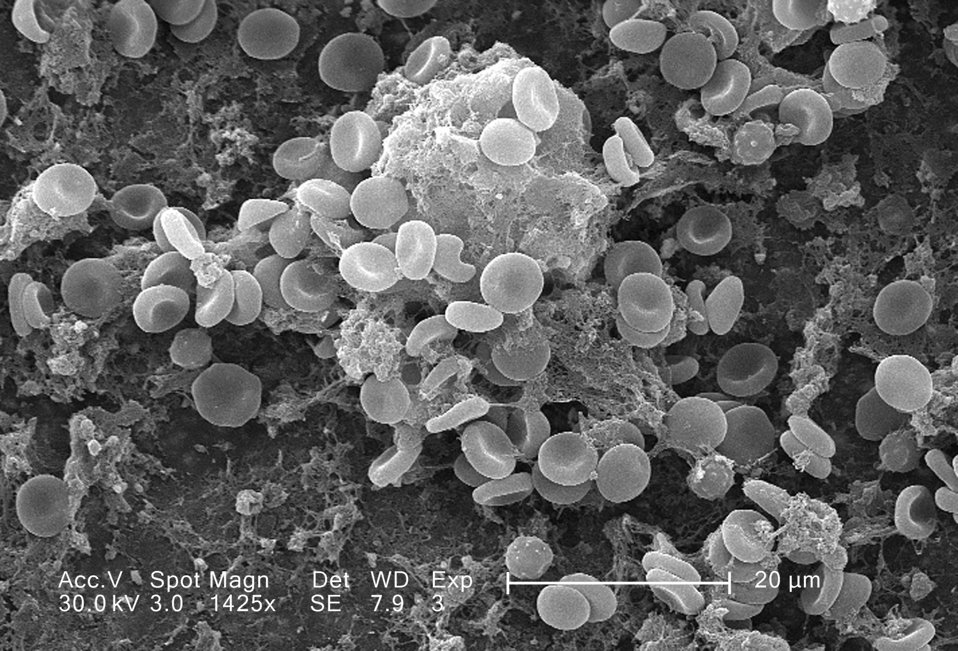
This scanning electron micrograph (SEM) depicted a number of red blood cells found enmeshed in a fibrinous matrix on the luminal surface of an indwelling vascular catheter; Magnified 1425x. In this instance, the indwelling catheter was a tube that was left in place creating a patent portal directly into a blood vessel.